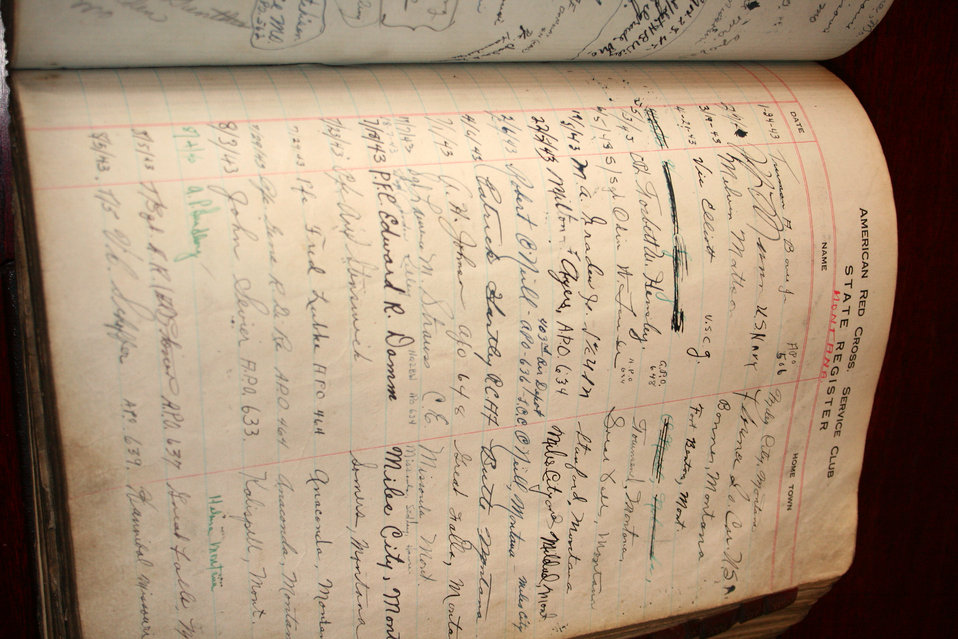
Rare find focuses on Scottish-American history

A rare book displaying signed names of Airmen, Soldiers, Sailors and Marines from World War II was presented to be viewed by the first American military members since the war to the 501st Combat Support Wing Sept. 30, 2009, in Glasgow, Scotland. The book was discovered by a city councillor recently.